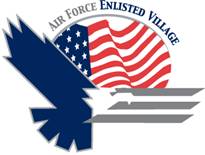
Thunderbirds' aircrew surprise widows at Enlisted Village

Aircrew members of the Thunderbirds, the Air Force's air demonstration team, visited with residents at Hawthorn House, the Air Force Enlisted Village's assisted living residence in Shalimar, Fla. They brought with them signed Thunderbirds lithographs for each of the AFEV's three locations, and more than $800 that the Airmen had raised overnight to donate to the enlisted village.